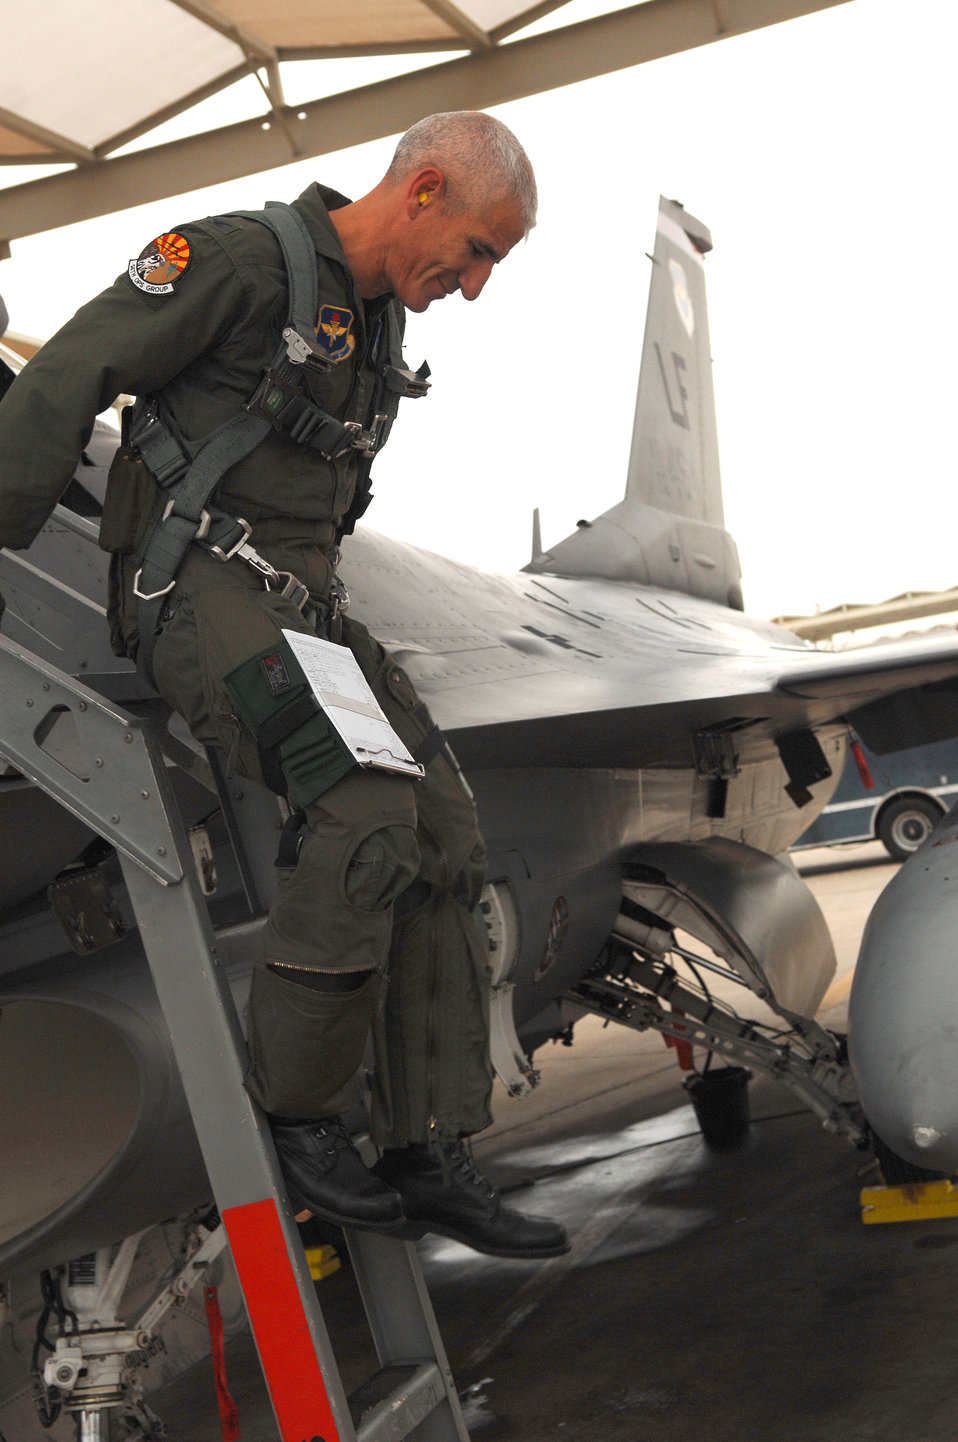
Luke pilot reaches F-16 milestone

Col. David Lujan, 56th Operations Group deputy commander, climbs out of his F-16 Fighting Falcon Dec. 22 at Luke Air Force Base, Ariz., moments after completing his 4,000 hour in the aircraft. He is the 17th pilot to reach this milestone.